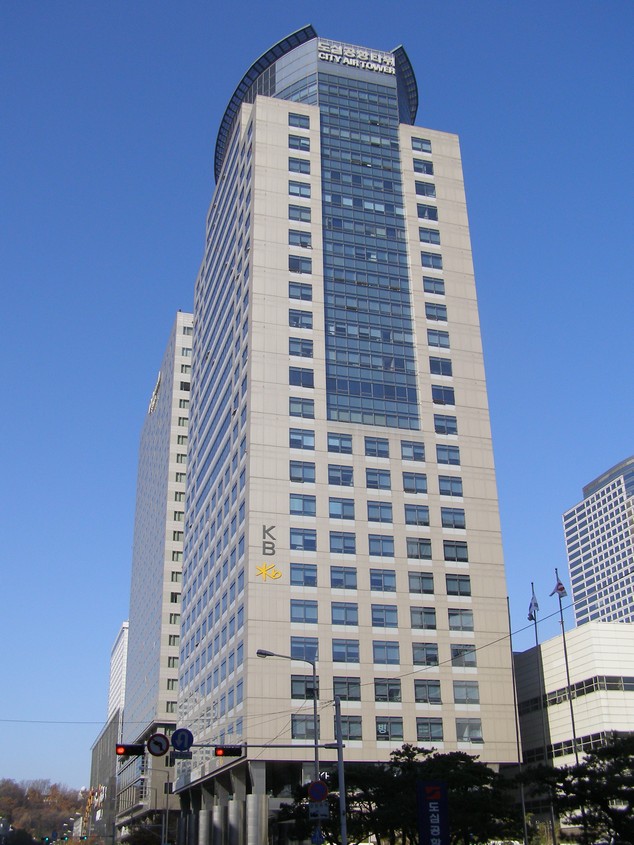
Korea City Air Terminal Building